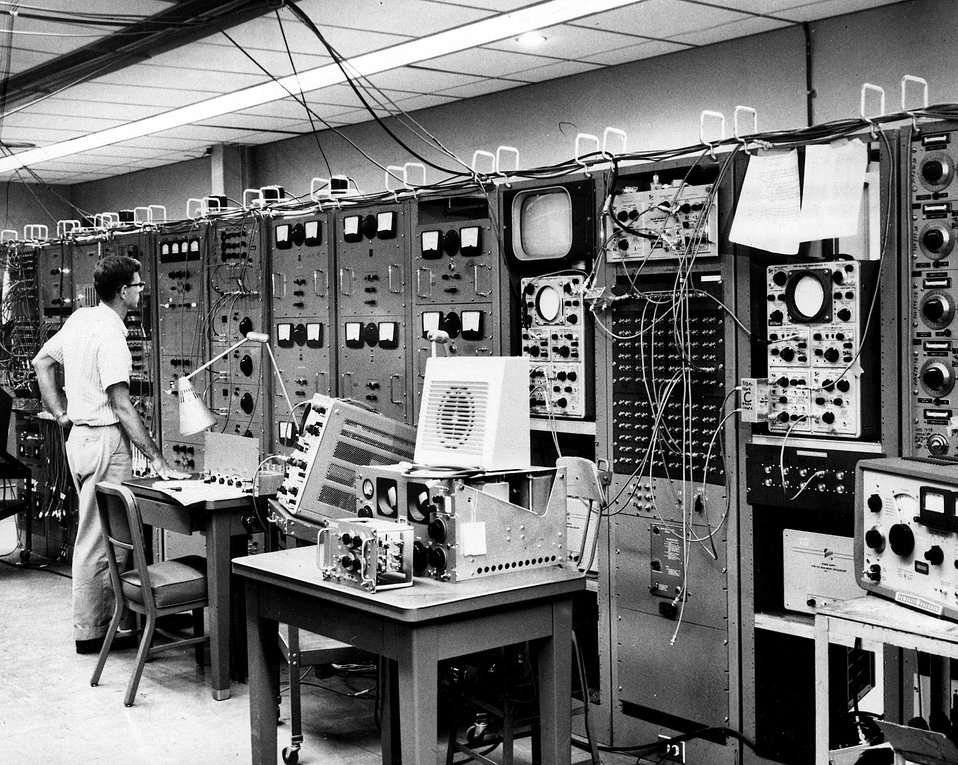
Main control room for the Alternating Gradient Synchrotron. c. 1962